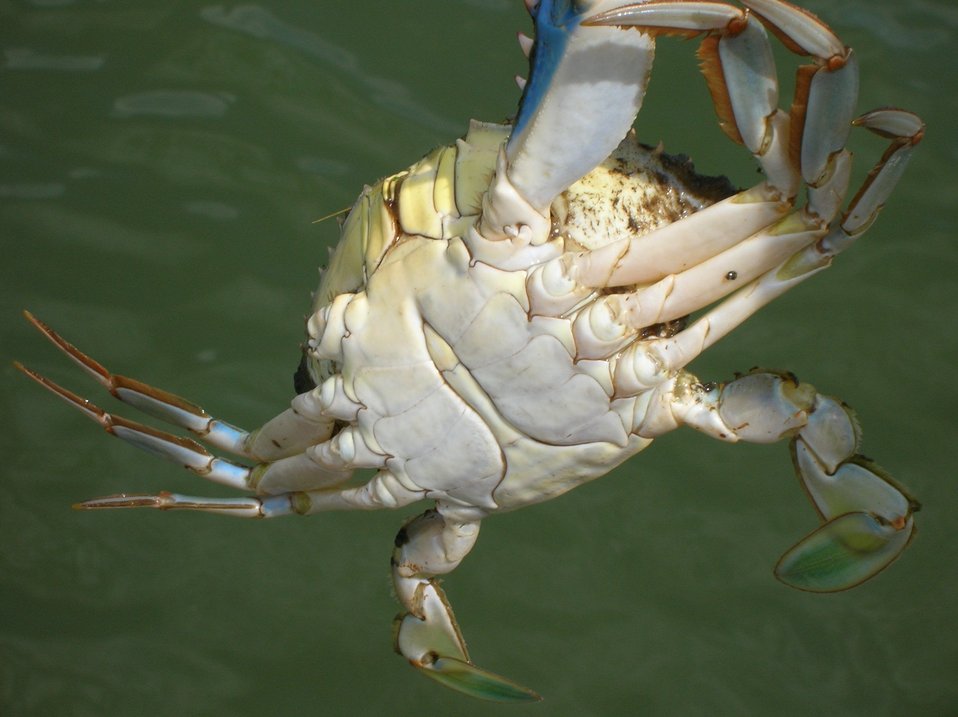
Male blue crab. Compare underside of male to female sook in image line4166.